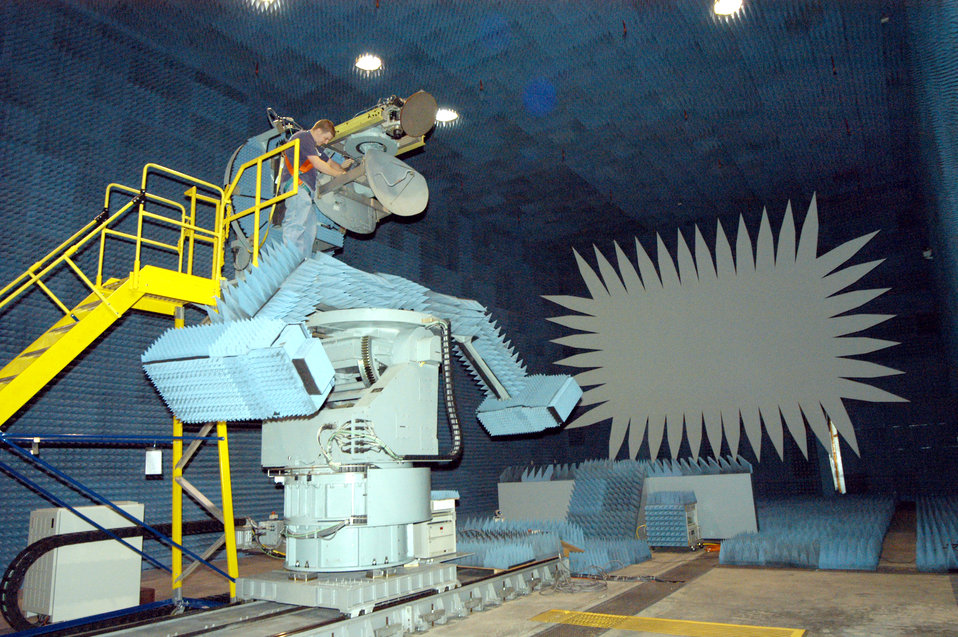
Making waves

ROBINS AIR FORCE BASE, Ga. -- Brian Kirchhefer prepares to test a Combat Talon II radome in the anechoic chamber also known as Radome Verification System range.